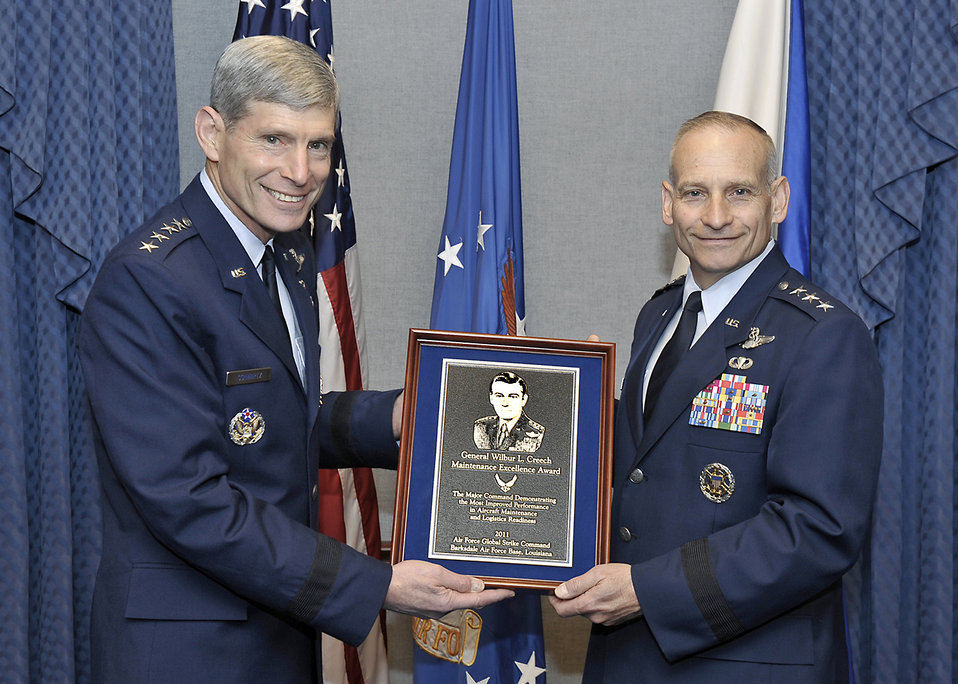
Air Force Chief of Staff Gen. Norton Schwartz presents Lt. Gen. James Kowalski, Air Force Global Strike Command commander, the Gen. Wilbur L. Creech Maintenance Excellence Award for 2011 during a ceremony at the Pentagon April 16, 2012. The award is presented to the major command that demonstrates the most improved performance in aircraft maintenance and logistics readiness in a given fiscal year.